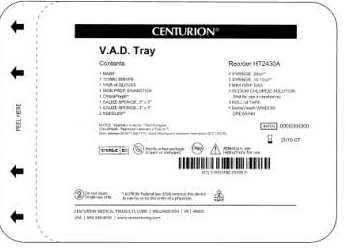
RECALLED - Convenience kits which contain bacteriostatic sodium chloride solution by American Regent

April 1, 2011 - Product Recall - Centurion Medical Products Initiates Voluntary Recall of Customized Convenience Kits (including select Central Venous Catheter, PICC Insertion, and VAD Trays) that contain American Regent’s Bacteriostatic Sodium Chloride Injection, USP, 0.9% 30 mL Multiple Dose Vials.